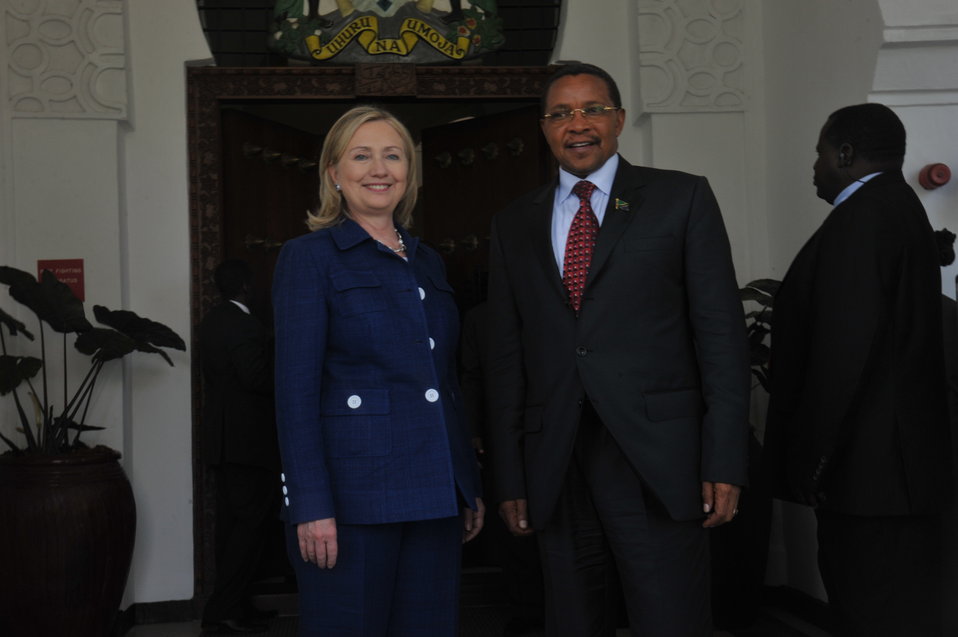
Secretary Clinton and Tanzanian President Kikwete Pose for a Photo

U.S. Secretary of State Hillary Rodham Clinton, left, and Tanzanian President Jakaya Kikwete, right, pose for a photo after their bilateral meeting and joint press conference, at the State House in Dar es Salaam, Tanzania, on June 13, 2011.